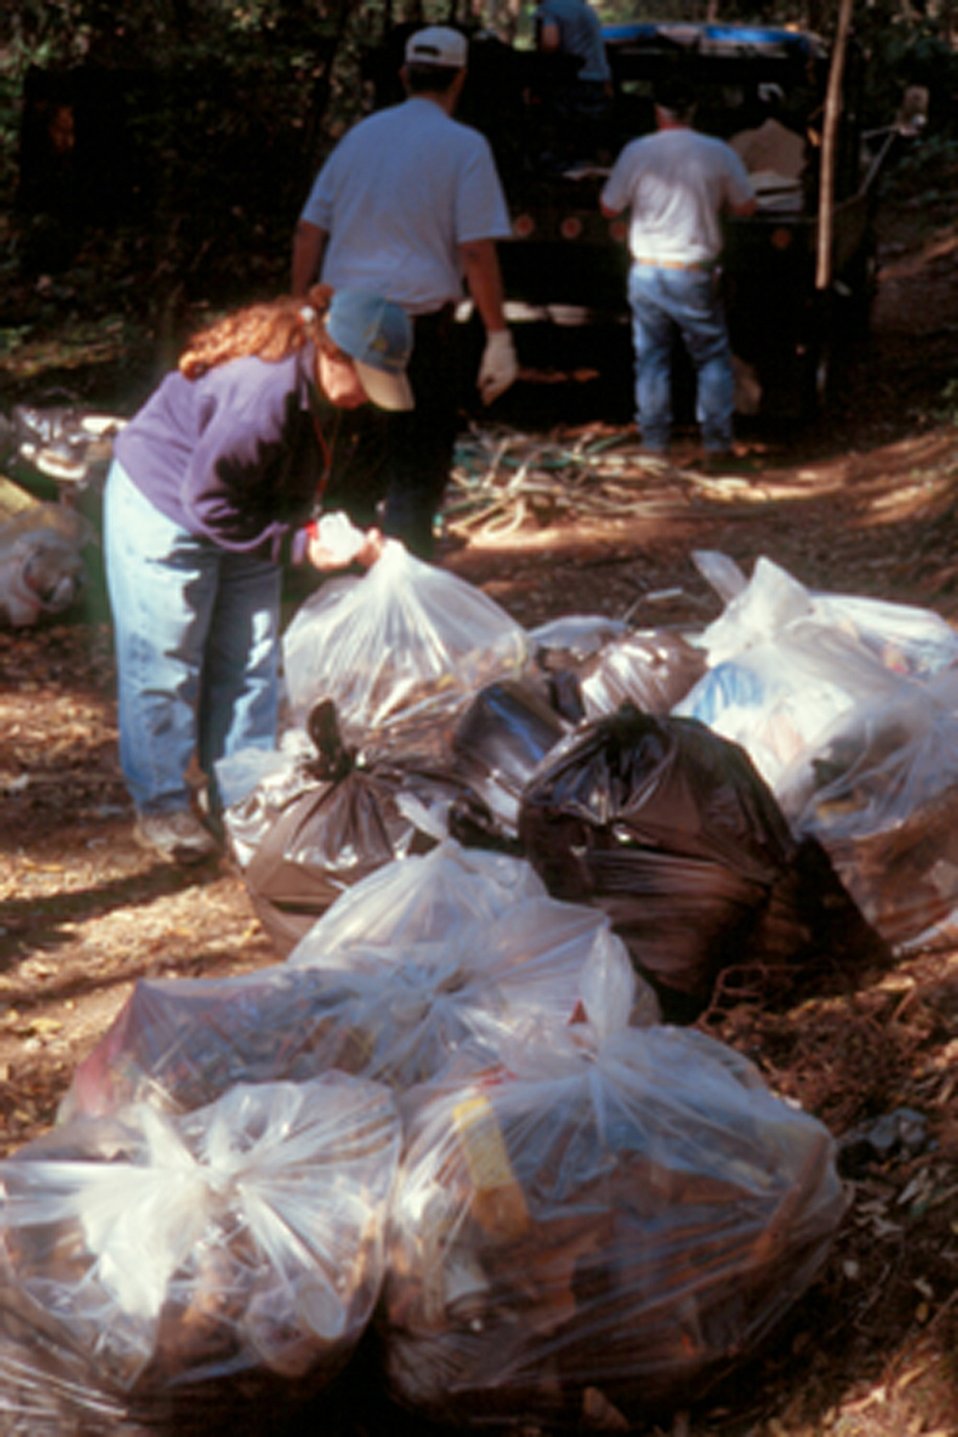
Junction City Jeepers clean up a hidden trash site on BLM lands